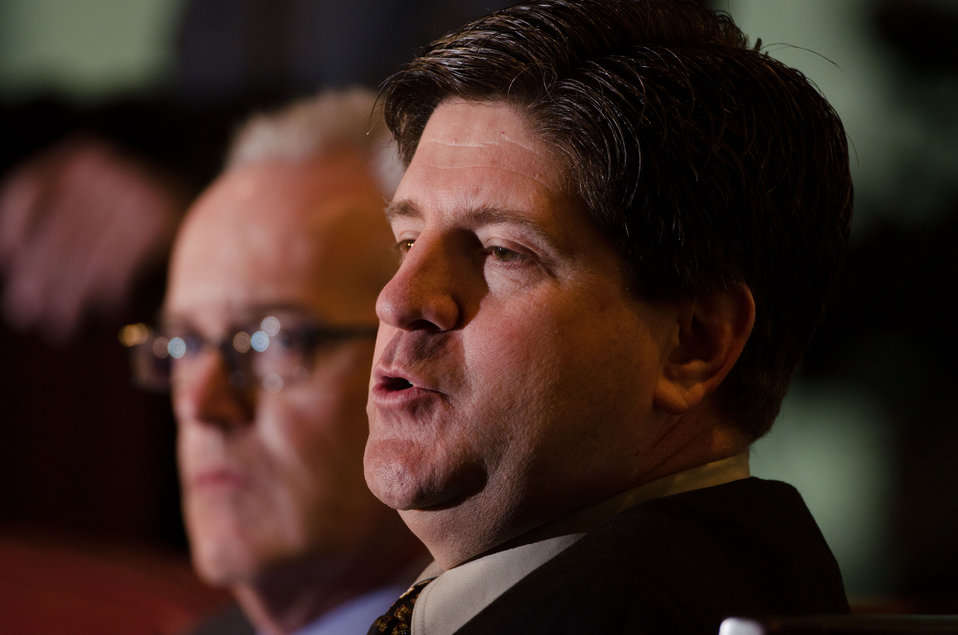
Cargil AgHorizons President David Baudler responds to a question during the 2013 Agricultural Outlook Forum, held at the Crystal Gateway Marriott Hotel, Arlington, Virginia on Thursday, Feb. 21, 2013. This annual Forum brings together producers, policymakers, and business, government, and industry leaders to meet, exchange ideas, and discuss timely agriculture issues.